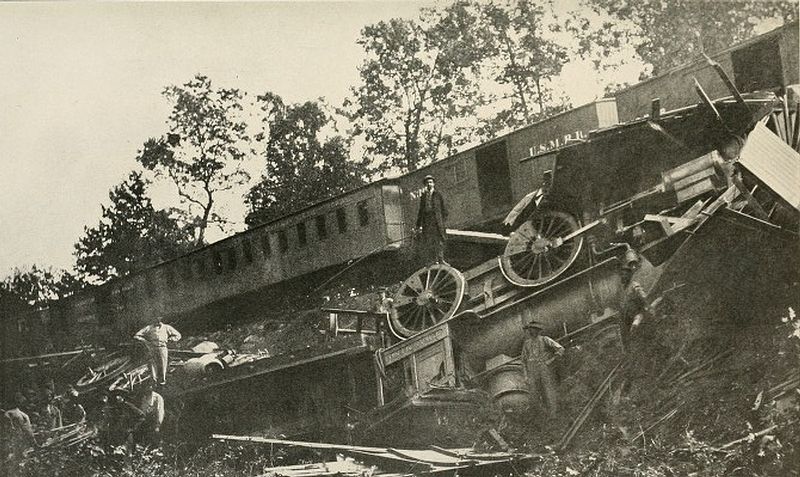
Union Trains Wrecked at Manassas on August 26, 1863

File from The Photographic History of The Civil War in Ten Volumes: Volume Four, The Cavalry.
The 2nd Battle of Manassas occurred in 1862, from which the Union retreated to Washington, D.C. and the Capitol became a hospital for causalities.